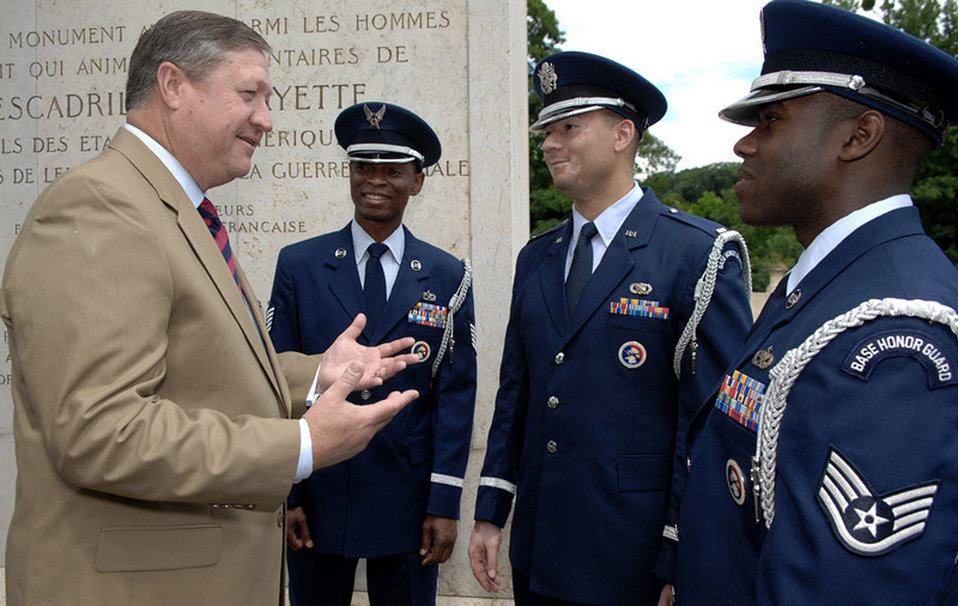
SECAF visits Paris

Secretary of the Air Force Michael Donley praises Tech. Sgt. Mike Jackson, 1st Lt. Chris McDaniels and Staff Sgt. Fred Stevenson, members of the 52nd Fighter Wing, Spangdahlem Air Base Honor Guard in Germany, for their support to the wreath laying ceremony at the Memorial de l'Escadrille La Fayette just outside of Paris June 13. The ceremony attended by U.S. senators, the Secretary of the Air Force, U.S. and French dignitaries, paid honor to the American volunteer combat flying aces known as the